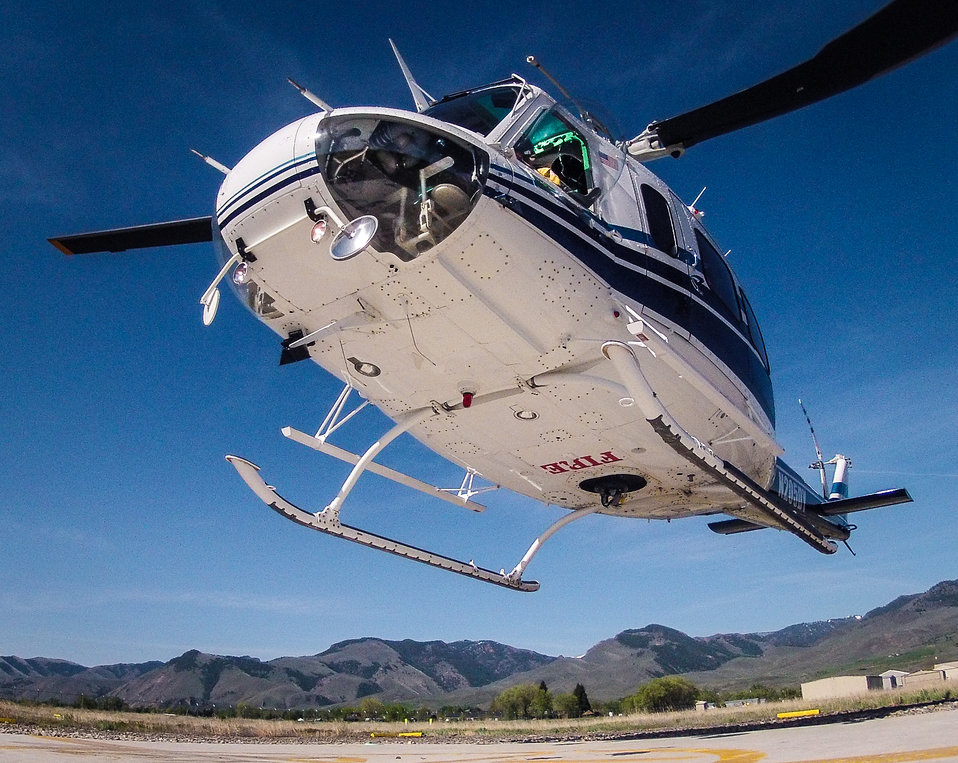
Idaho Helicopters, Inc., Assistant Chief Pilot JT Theis lands a Bell 205A-1 helicopter for veteran wildland firefighter rappellers to board for training at the U.S. Department of Agriculture (USDA) U.S. Forest Service (USFS) National Helicopter Rappel Program’s Rappel Academy at Salmon Air Base in Salmon, ID on Wednesday, May 14, 2014. From May 12, 2014, 72 veteran rappellers from all over the nation, 30 support staff, and three helicopters with flight crews attend the training at Salmon Air Base. Participants will rappel into the Perreau Creek area. The annual training is delivered in accordance with the National Rappel Operations Guide; strengthen leadership, teamwork, and communications within the rappel community, and produces quality aerial delivered firefighters for use in fire and aviation operations. The USDA Forest Service National Helicopter Rappel Program’s primary mission is initial attack. Rappel crews may be utilized for large fire support, all hazard incident operations, and resource management objectives.